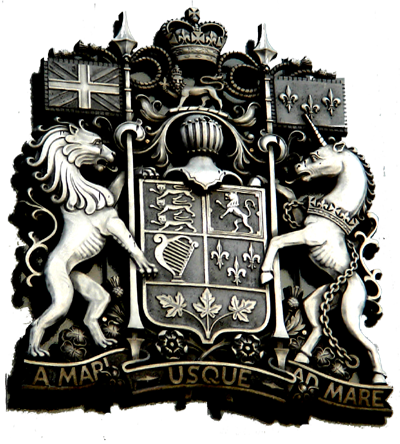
Basrelief of the Coats of arms of Canada (as it appears on the Port of Charlottetown, PEI building)